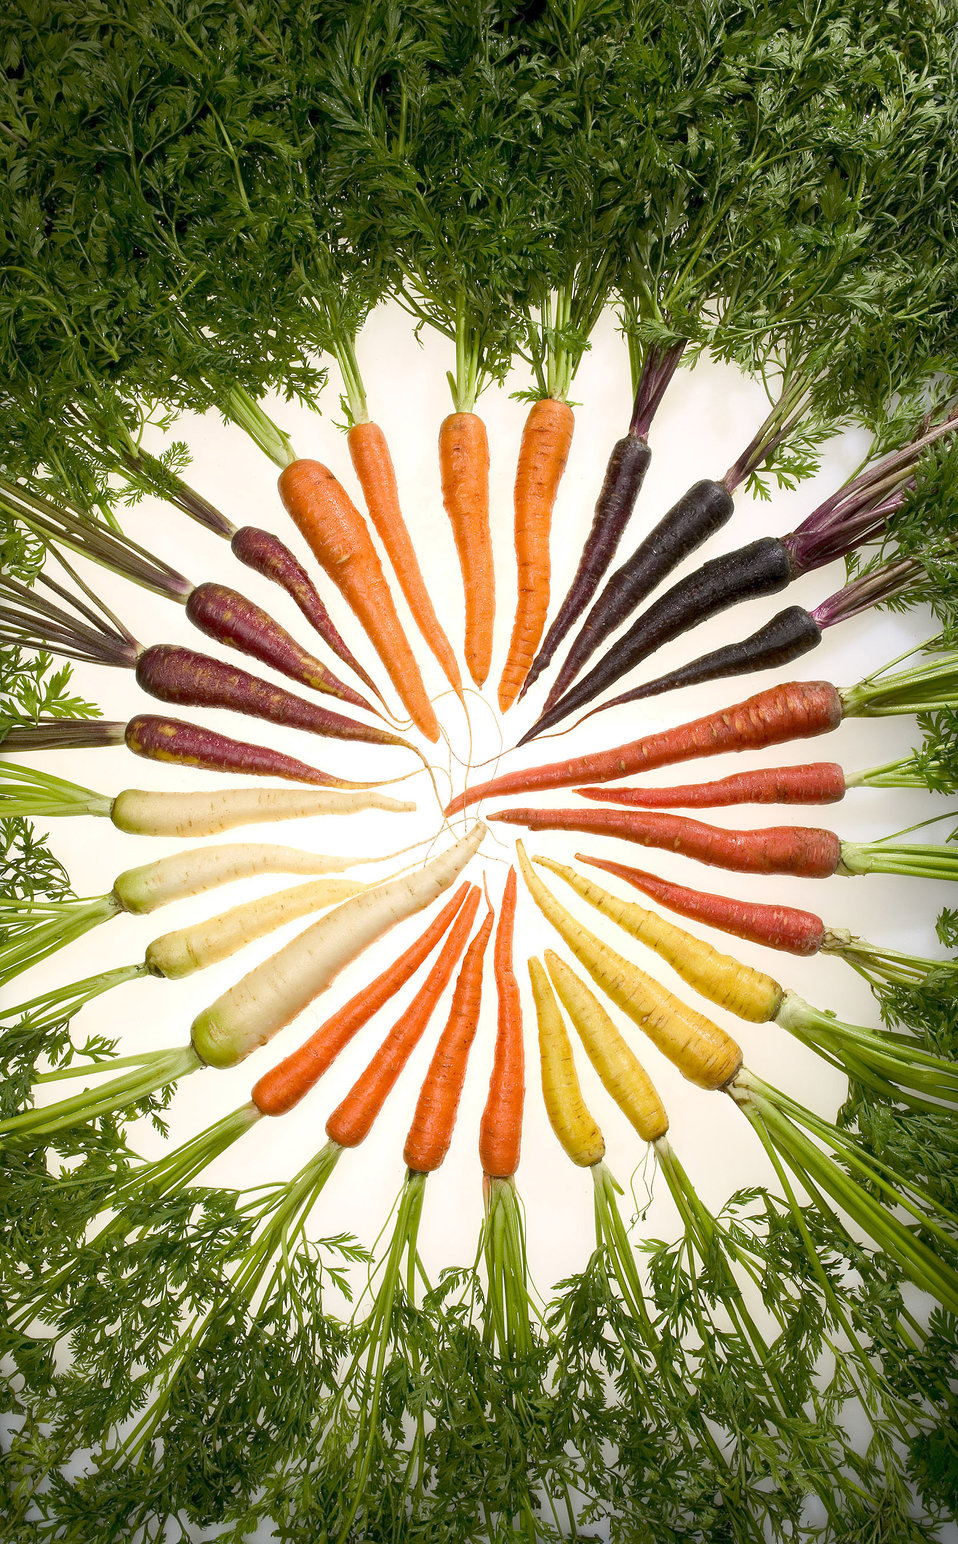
A photograph of carrots that the U.S. Department of Agriculture (USDA) Agricultural Research Service (ARS) researchers have selectively bred with pigments that reflect almost all colors of the rainbow on Sept. 1, 2004. More importantly, though, they're very good for your health.